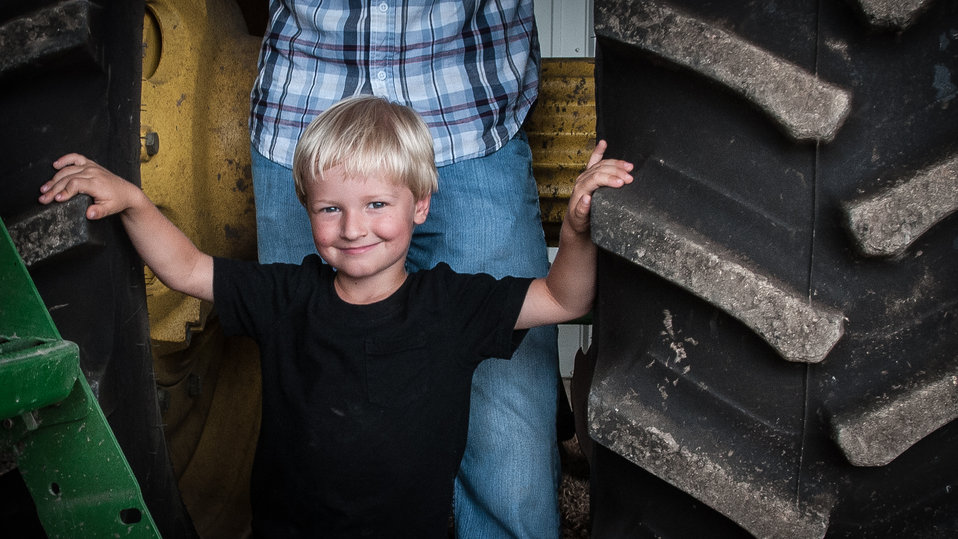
Hayden Popp (2, pronounced Pope) may one day own Popp Farms 05, but for now, he is happy to stand with his dad Michael, between the six-foot rear wheels of his father’s and grand father’s tractor, at Popp Farms 05, in El Campo, TX on Jun. 20, 2013. The 2,400 acres of farmland currently grow cotton and milo (grain sorghum) and are part of the United Agricultural Cooperative, Incorporated.